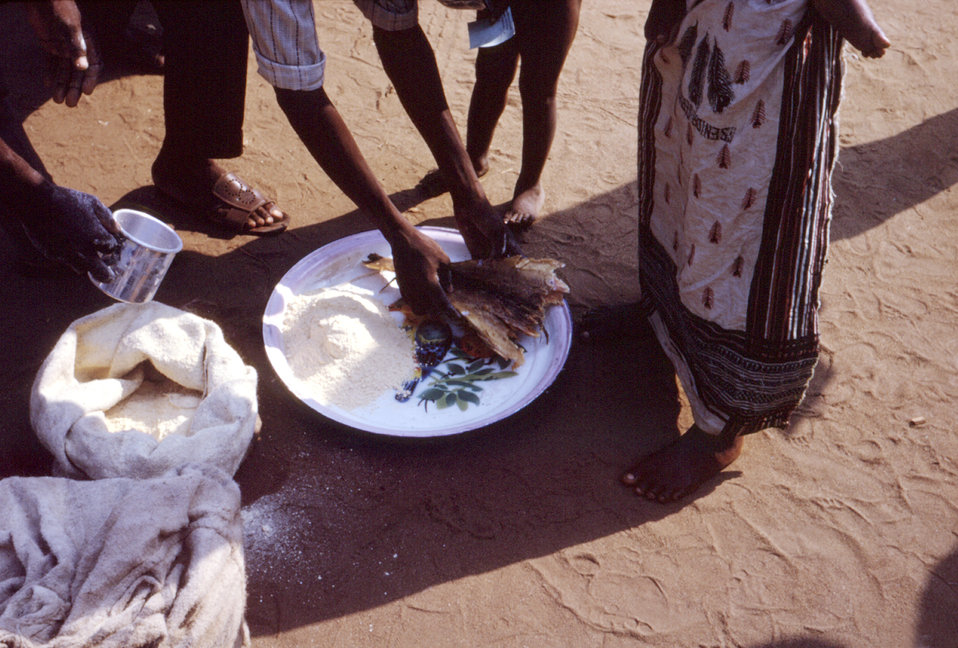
This photograph depicts dry food being distributed to a woman and her family at a relief camp surrounding the Nigerian-Biafran war zone in Nigeria; Corn soya meal (CSM), and dried fish were distributed in this camp, along with local carbohydrates including yams and casava.